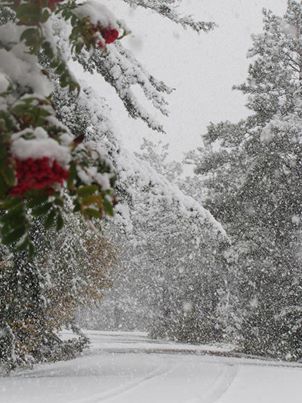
First snow

Winter comes early to Seney National Wildlife Refuge in Michigan's Upper Peninsula. The first snow of winter 2013-14 fell in October,